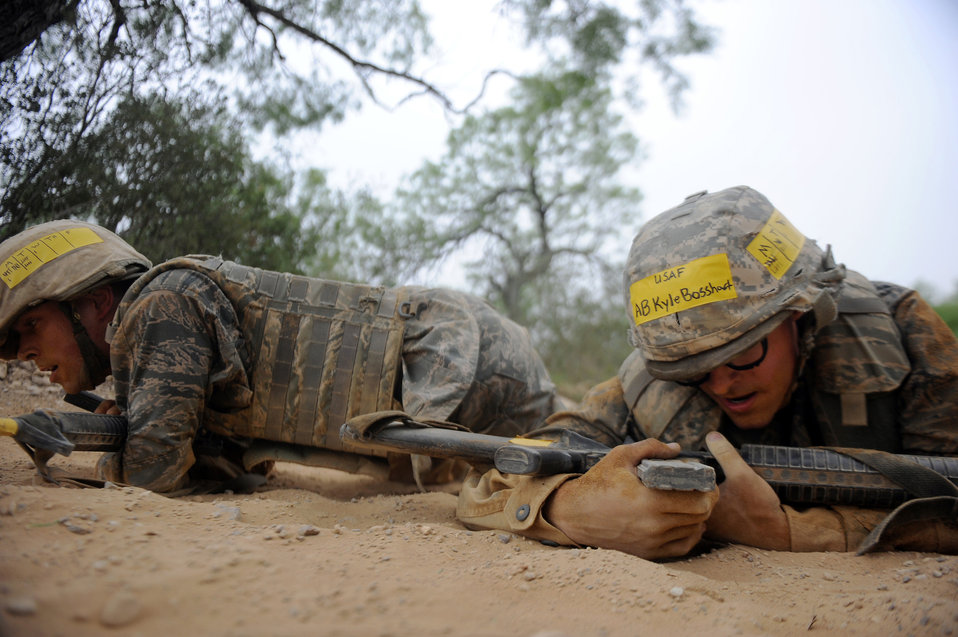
BEAST

Basic trainees go through their sixth week of Air Force basic military training at the Basic Expeditionary Airman Skills Training on May 25, 2011, at Lackland Air Force Base, Texas.